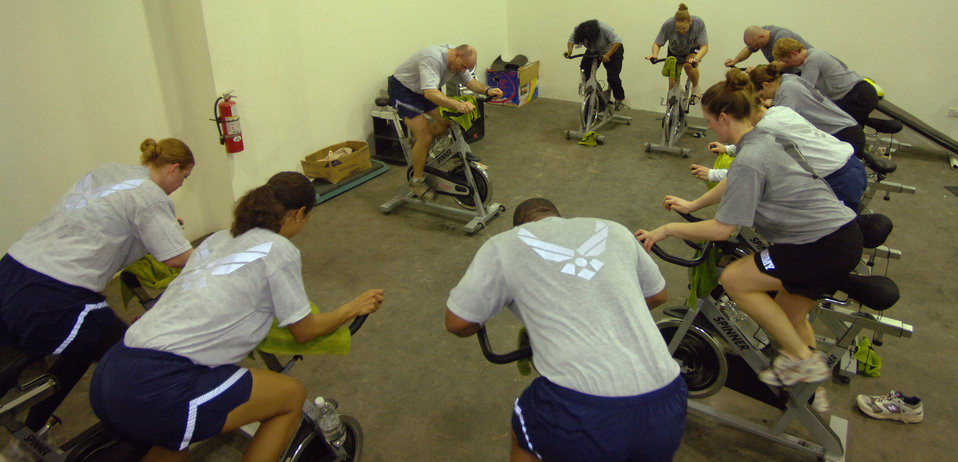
Pick up the pace

Master Sgt. Kirk Clear leads this spin class Jan. 22, telling the others to pick up the pace on their exercise bikes at the Red Tail Fitness Center at Balad Air Base, Iraq.